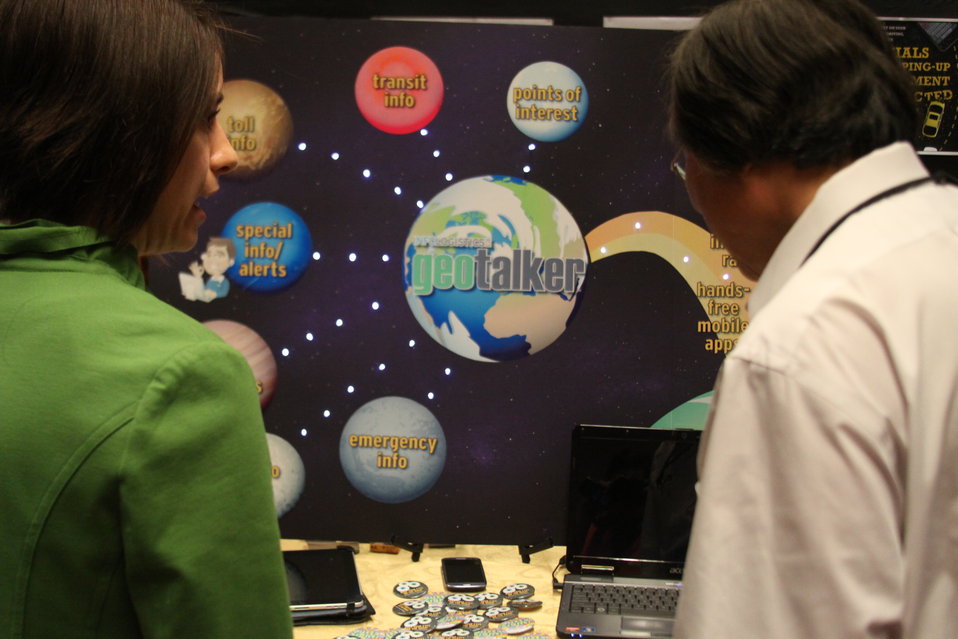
Distracted Driving Technology Showcase April 19, 2013